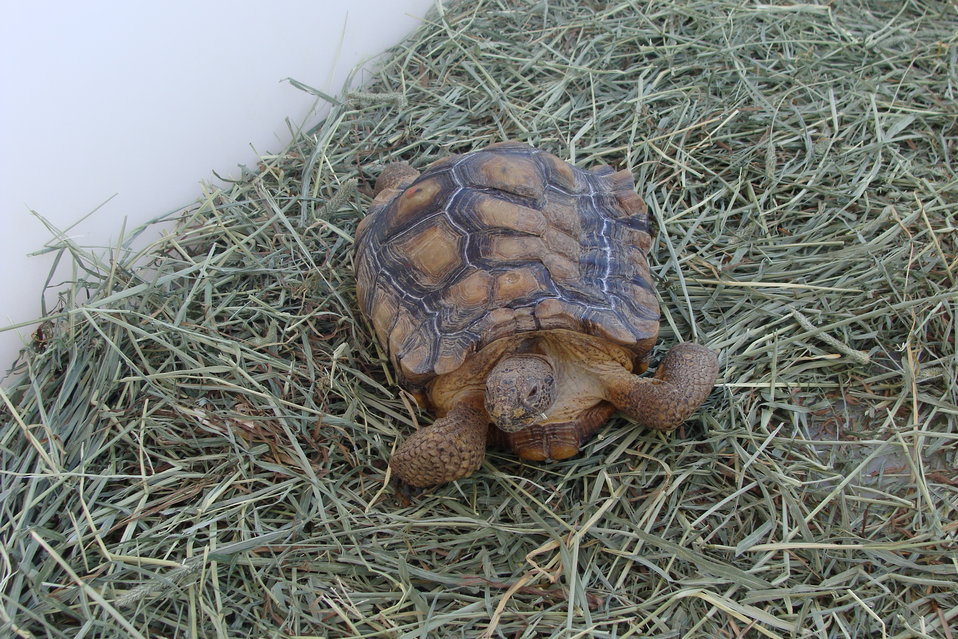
Mojave Desert Tortoise

The U. S. Fish and Wildlife Service has announced the availability of a Revised Recovery Plan for the threatened Mojave population of the desert tortoise (Gopherus agassizii) under the Endangered Species Act (ESA). The Plan takes a new approach to reversing declines in Mojave desert tortoise populations through a coordinated effort of science-based implementation and evaluation of conservation actions.

Unlike the previous Recovery Plan, which focused on mitigation measures, this Plan recognizes the need to adjust to the accelerating pace of environmental change and its impact on key resource management issues, such as corridors and connectivity. The Plan will be a living document that advances a natural resource management model where ongoing detection of changes and attribution of causes will provide the basic information on whether or not the desert tortoise or its ecosystem is changing beyond natural variability.

By continuous examination of vulnerability, exposure, sensitivity, and adaptive capacity of the desert tortoise to environmental change, resource managers will be able to update the Plan as it is being implemented with conservation measures that will help the desert tortoise recover.